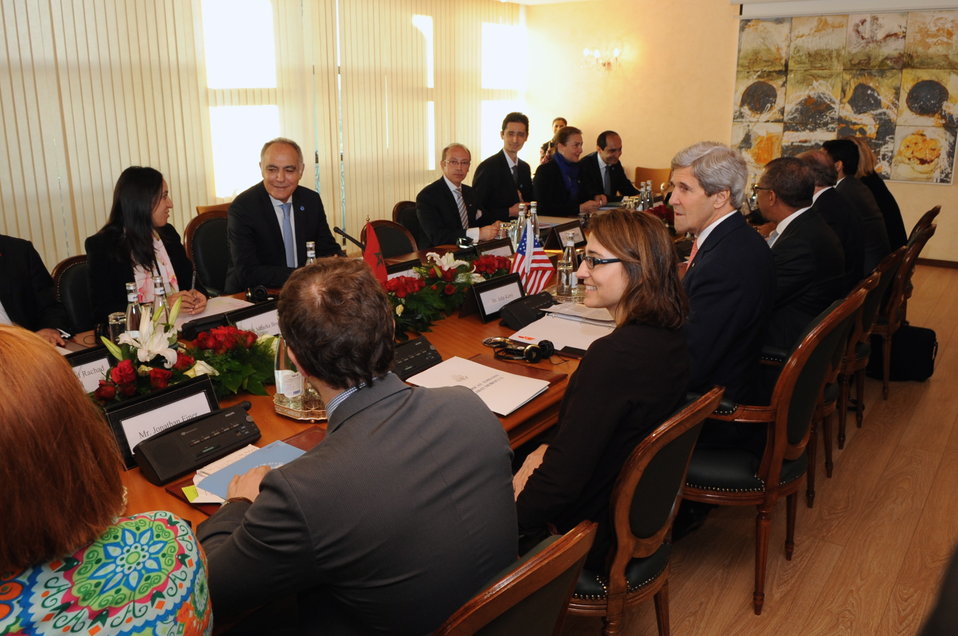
Secretary Kerry and Moroccan Foreign Minister Kick-off Strategic Dialogue in Rabat

U.S. Secretary of State John Kerry and Moroccan Foreign Minister Salaheddine Mezouar sit across from one another before the start of a Strategic Dialogue between their two countries at the Ministry of Foreign Affairs in Rabat, Morocco on April 4, 2014.